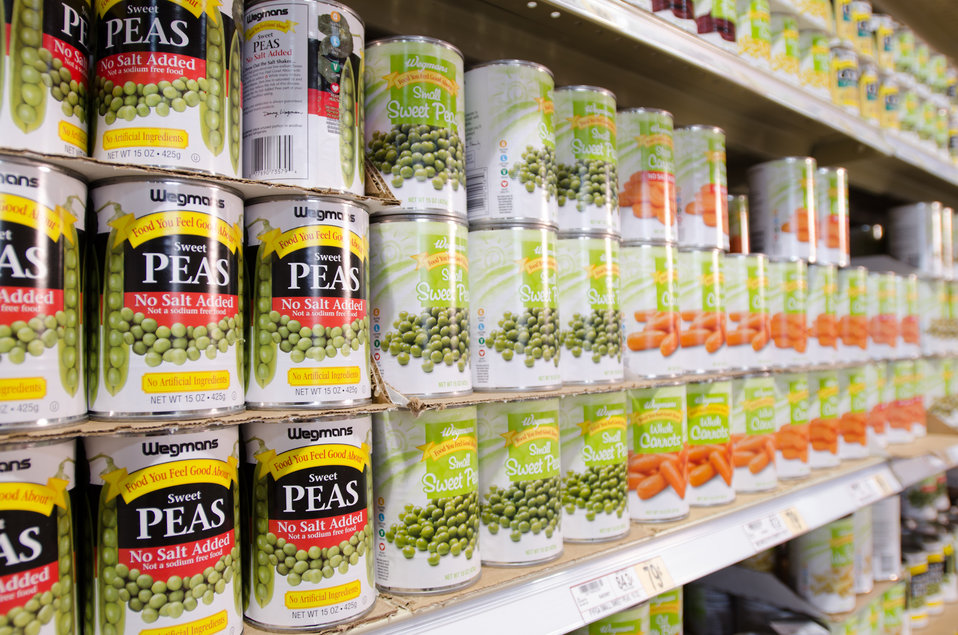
Canned goods at a grocery store in Fairfax, Virginia, on March 3, 2011.